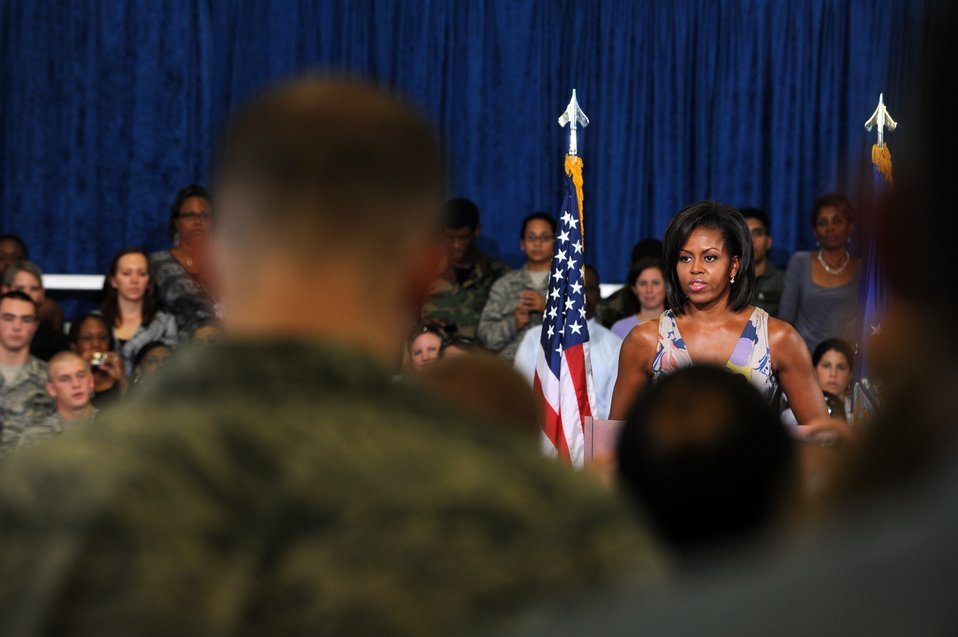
First lady speaks on taking care of military families

First Lady Michelle Obama speaks to military members and their families at Eglin Air Force Base, Fla., during a visit to the base Oct. 15. Ms. Obama talked about the importance of taking care of families and praised the Air Force for programs like the Year of the Air Force Family.